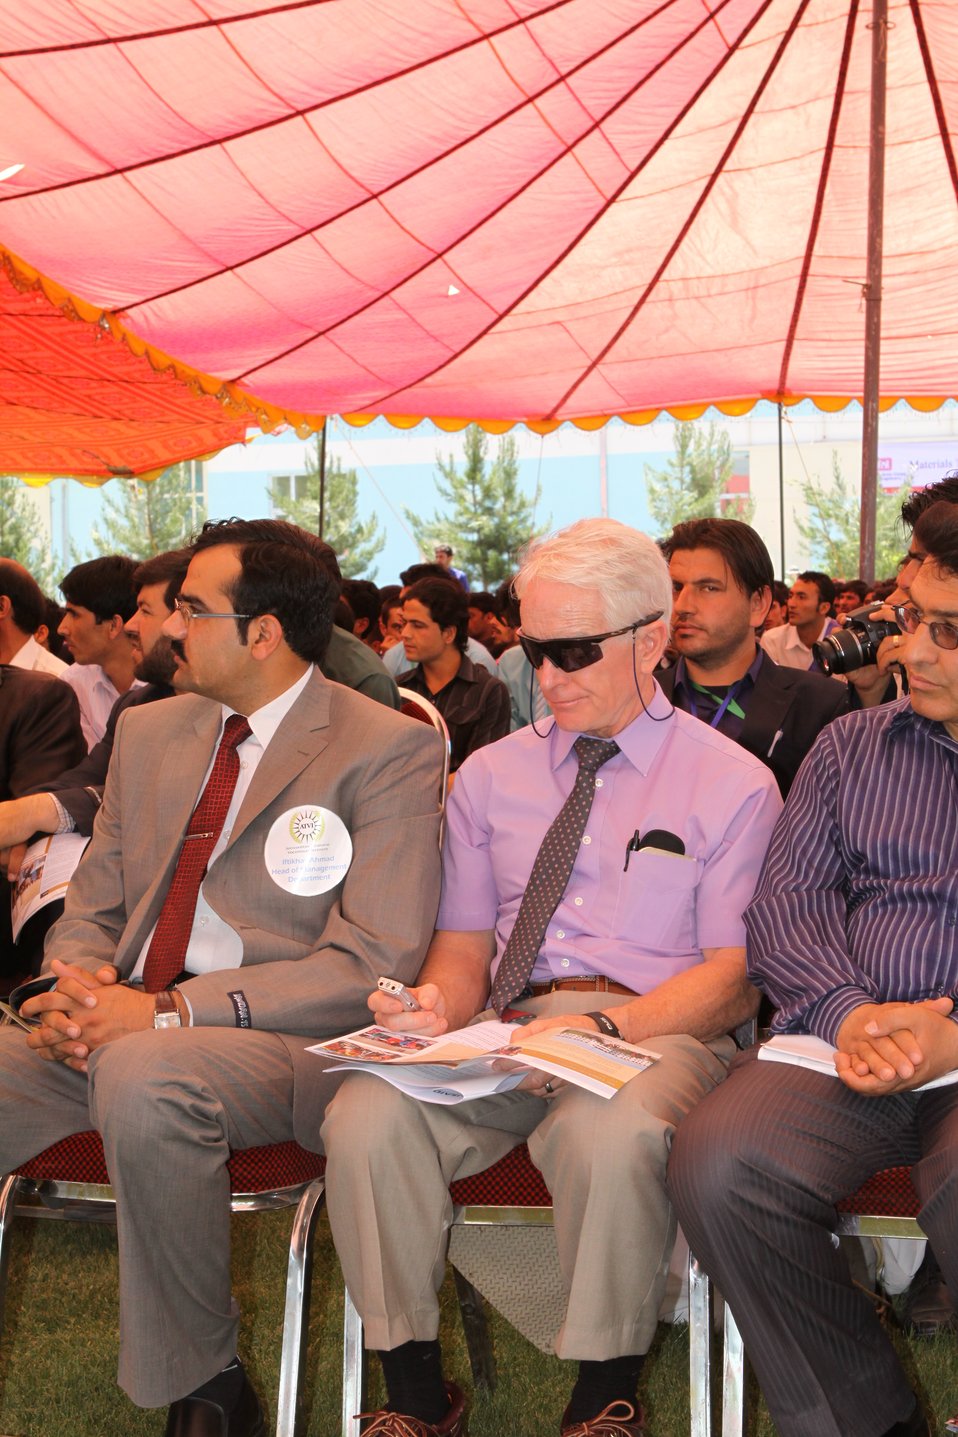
100522 ATVI Graduation 068